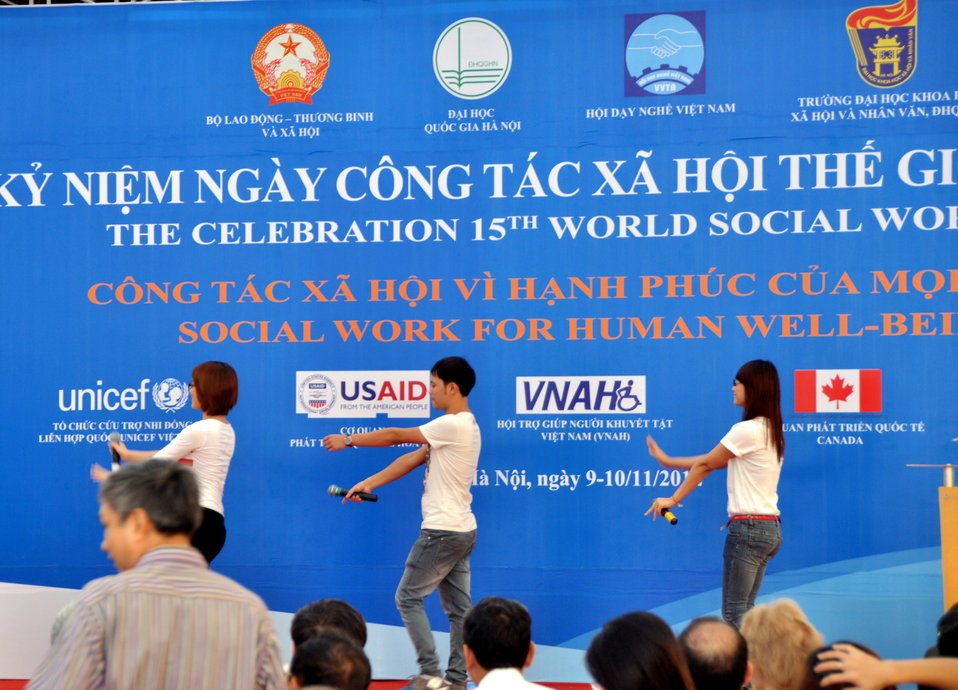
USAID Supports Social Work Education

Photo: @USAIDVietnam, November 9, 2012